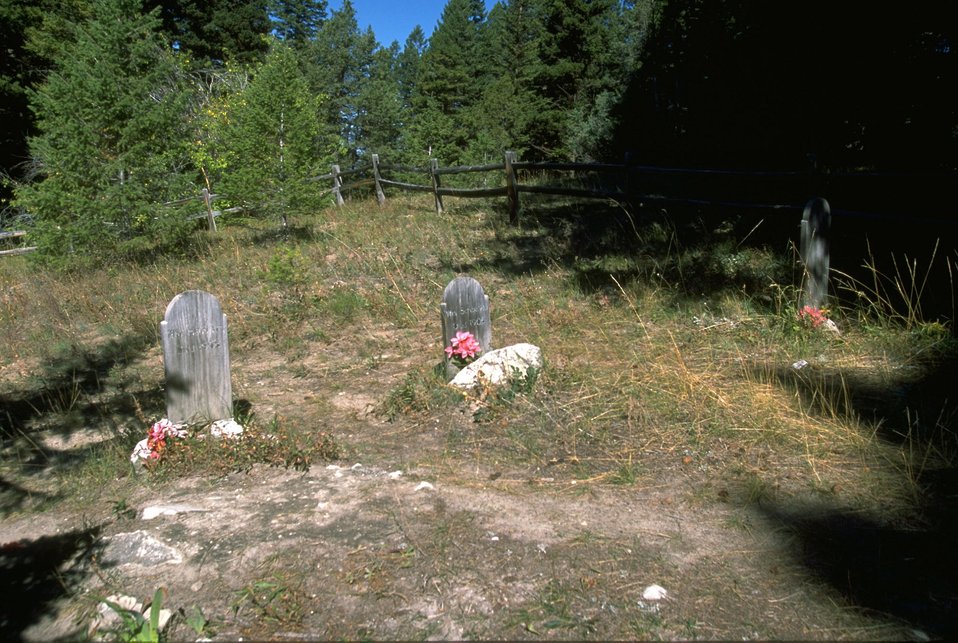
Grave markers at Sand Park cemetery along Garnet Back Country Byway